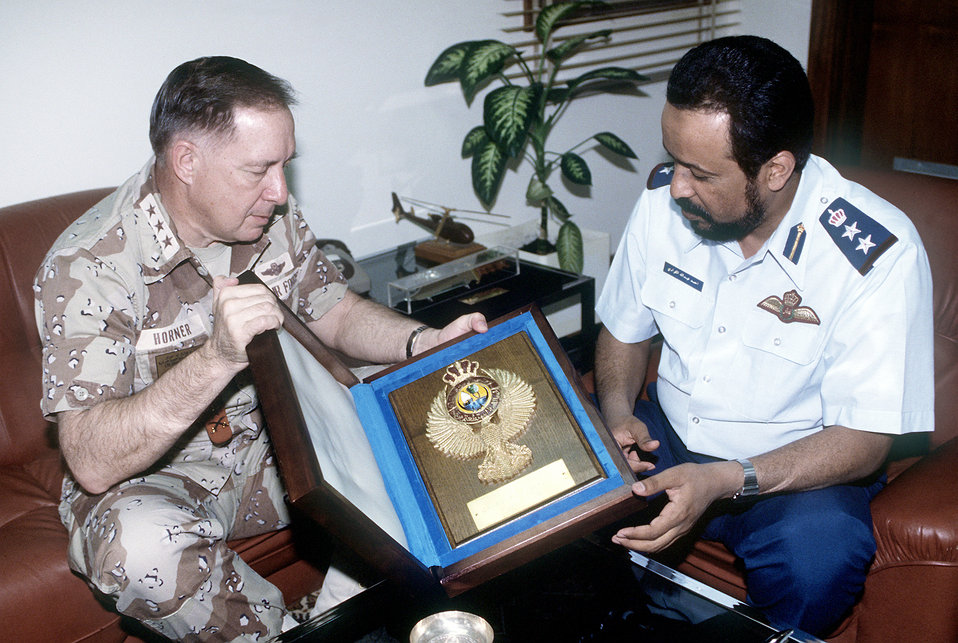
Operation Desert Storm

Lt. Gen. Charles Horner, commander of U.S. Central Command Air Forces, receives a plaque from Col. Ahmed Al-Kuwari, a Qatari commander, during a visit in the aftermath of Operation Desert Storm.